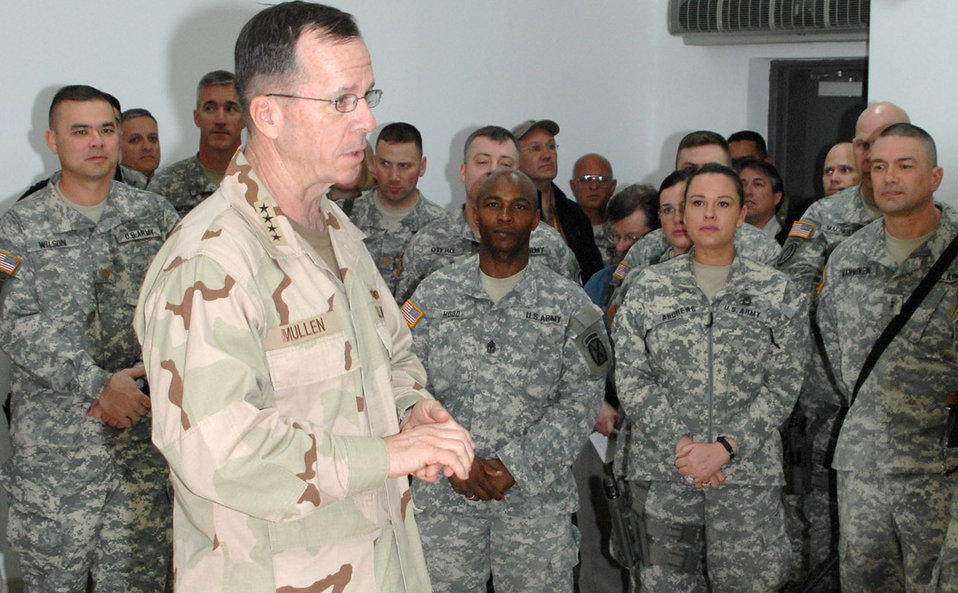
Joint Chiefs chairman visits servicemembers in Kirkuk

Chairman of the Joint Chiefs of Staff Navy Adm. Mike Mullen address Soldiers and Airmen during his March 2 visit to Kirkuk Air Base, Iraq. The highest ranking military officer attended meetings with the State Department Provincial Reconstruction Team, presided over a short promotion ceremony for two Army officers and had dinner with several Airmen and Soldiers during his visit.